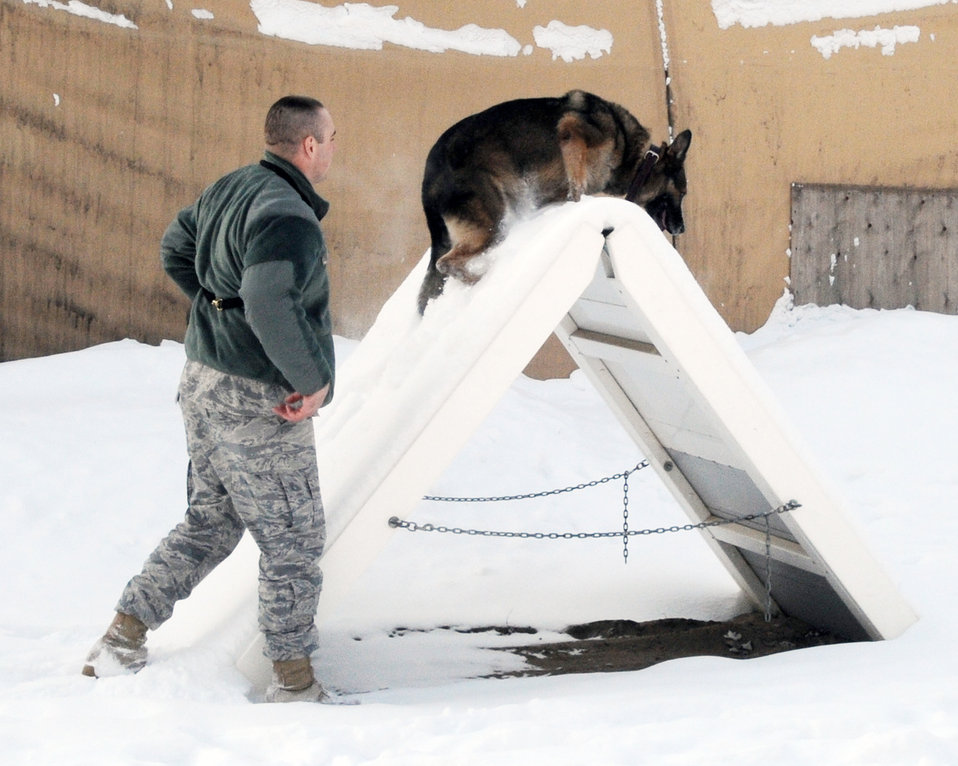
K-9 without a canine keeps working

Military working dog Arek runs an obstacle course for his handler, Staff Sgt. Patrick Lau, Feb. 10, 2010, at the Transit Center at Manas, Kyrgyzstan. Both are deployed to the 376th Expeditionary Security Forces Squadron from Hill Air Force Base, Utah.